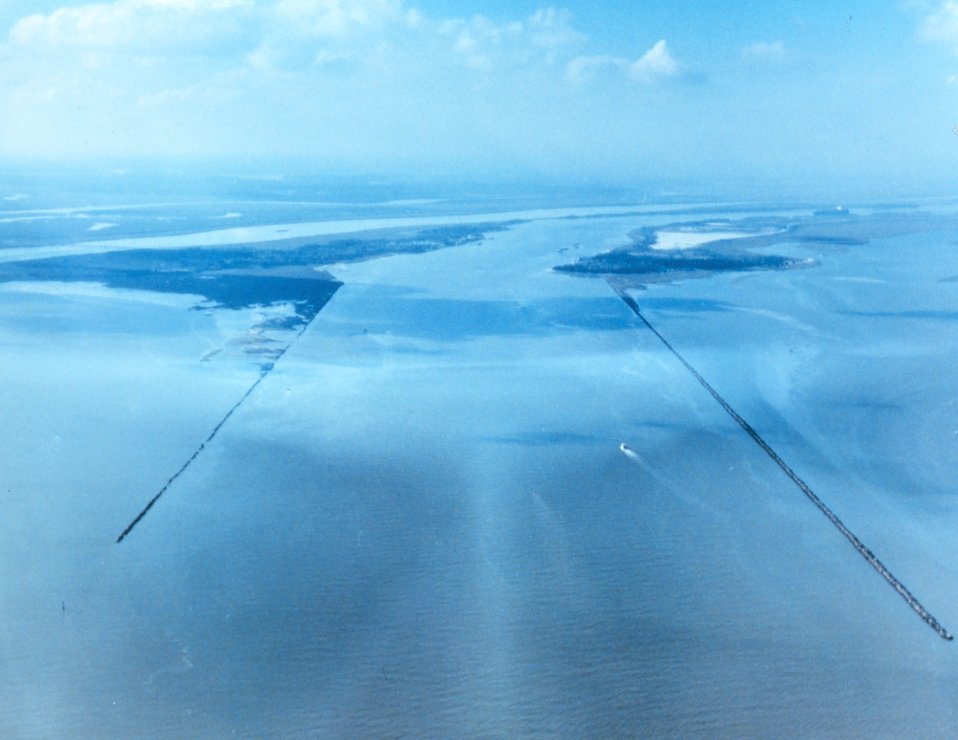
3201 North Latitude 8049 West Longitude.